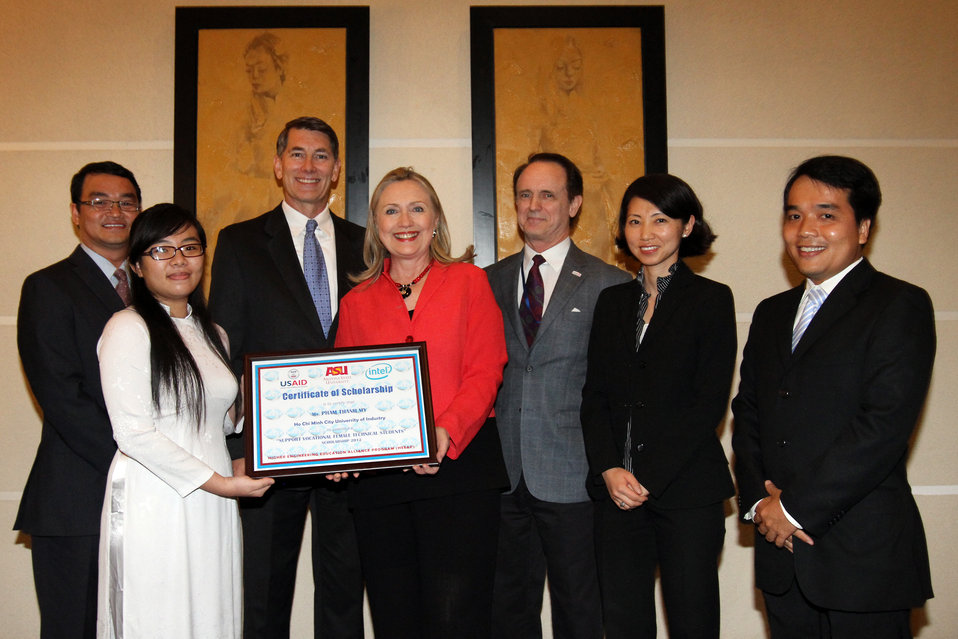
U.S. Secretary of State Hillary Clinton congratulates Ms. Pham Thanh My, the first scholarship recipient under the Higher Engineering Education Alliance Program (HEEAP) that aims to improve the quality of engineering education in Vietnam.

During her visit to Hanoi on July 10, 2012, U.S. Secretary of State Hillary Clinton congratulates Ms. Pham Thanh My of the Electronics Technology Department of Ho Chi Minh City University of Industry , the first scholarship recipient under the Higher Engineering Education Alliance Program (HEEAP) that aims to improve the quality of engineering education in Vietnam. HEEAP is supported by USAID, Intel, Arizona State University and other private sector partners. The scholarship program component of HEEAP supports and encourages female students in completing technical programs at vocational colleges in Vietnam.

July 10, 2012.